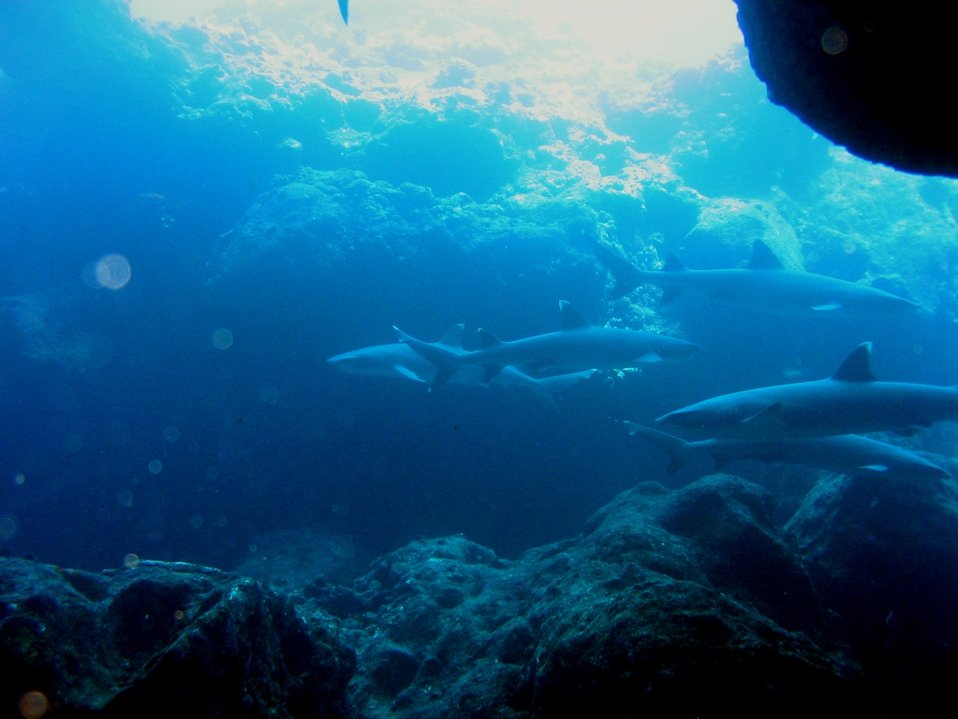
A group of white-tip sharks (Triaenodon obesus). Mano lalakea as called in the Hawaiian language.